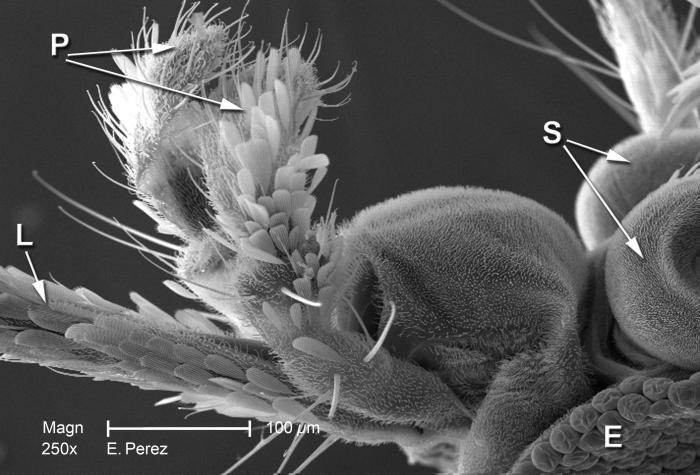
Magnified 250X, this scanning electron micrograph (SEM) is the second of three SEMs (see PHIL 10660, 10562) that are viewed under successively greater magnifications, while focusing on the cephalic, or head region of an unidentified mosquito discovered deceased in the Decatur, Georgia suburbs.